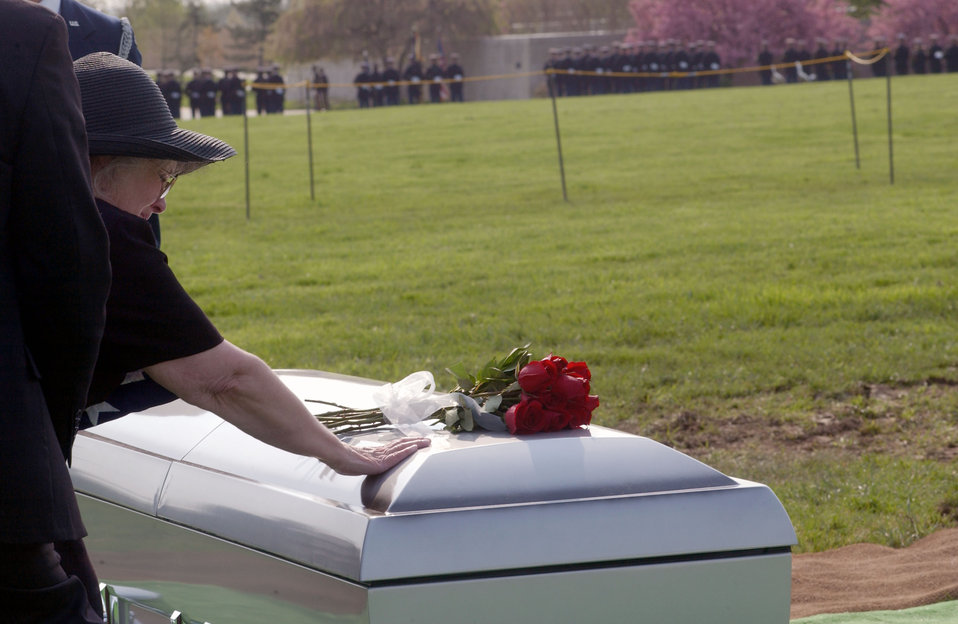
The last goodbye

ARLINGTON NATIONAL CEMETARY, Va. -- Betty Lenzi, the mother of Maj. Gregory L. Stone, touches her son’s casket before his burial here April 17. Stone was the first Air Force casualty of Operation Iraqi Freedom. He was assigned to the Idaho Air National Guard’s 124th Wing.